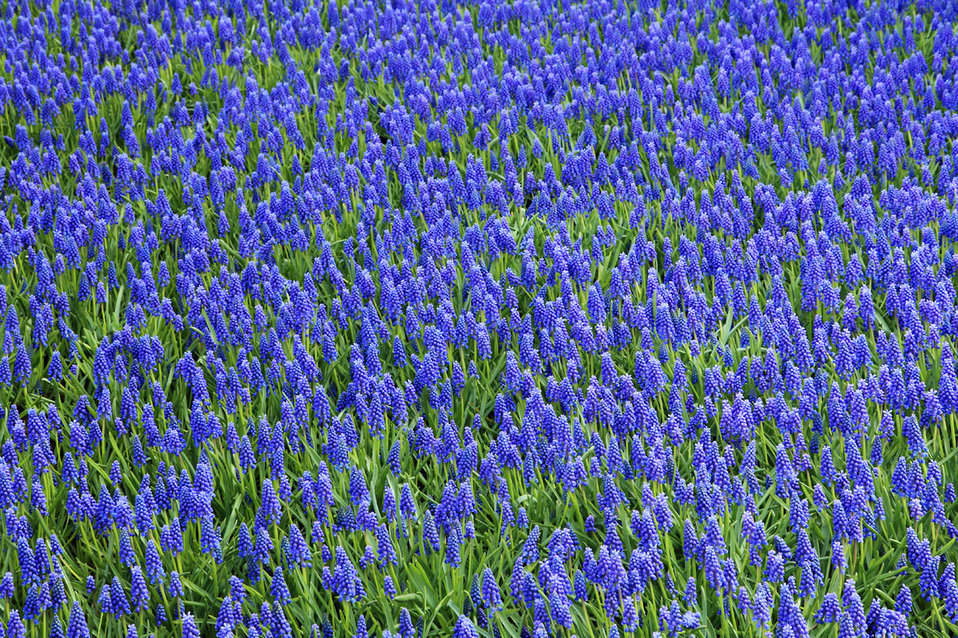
Muscari background

Grape hyacinth background image.